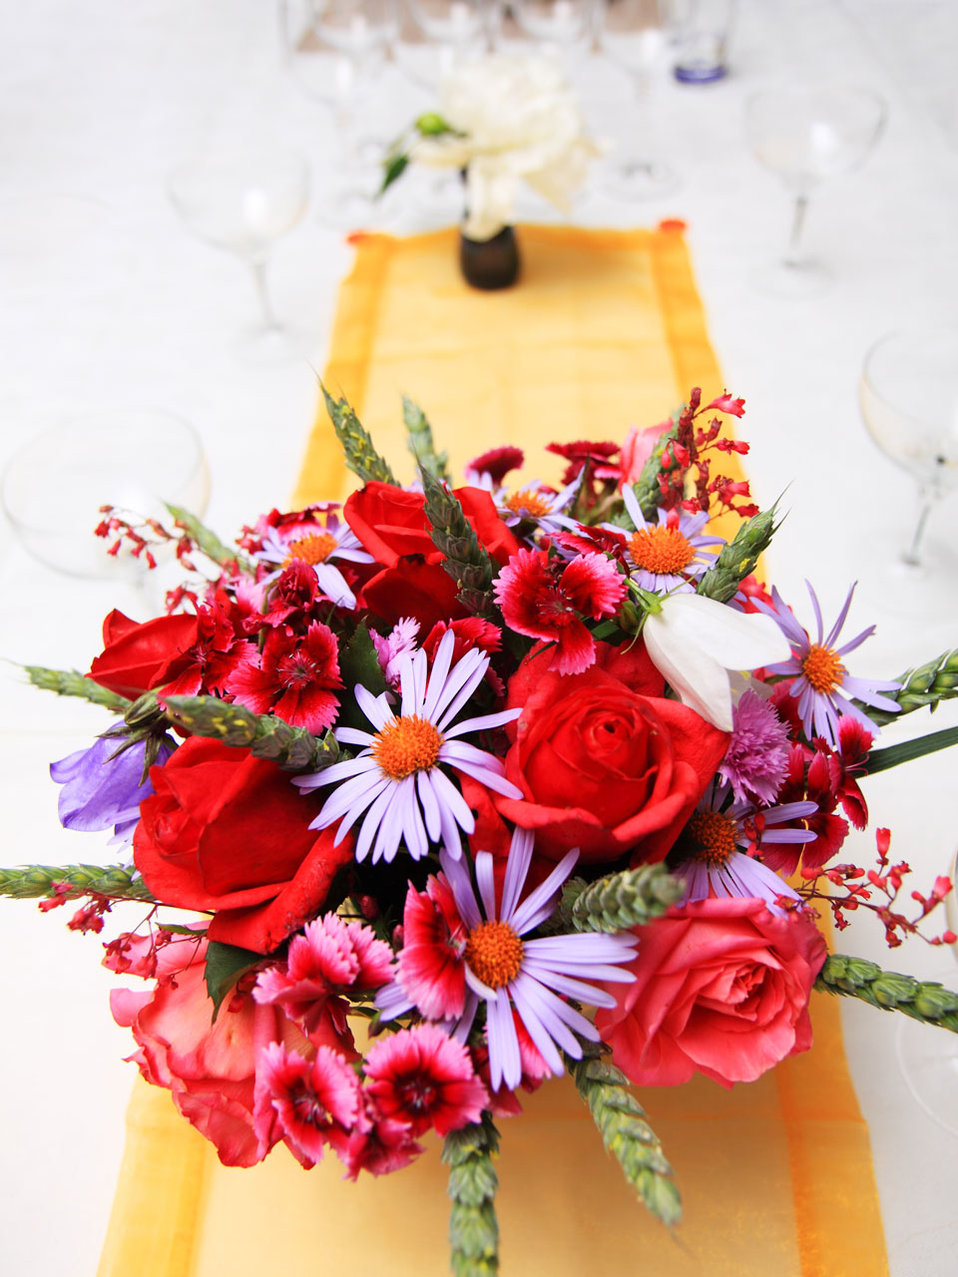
Restaurant table is ready.